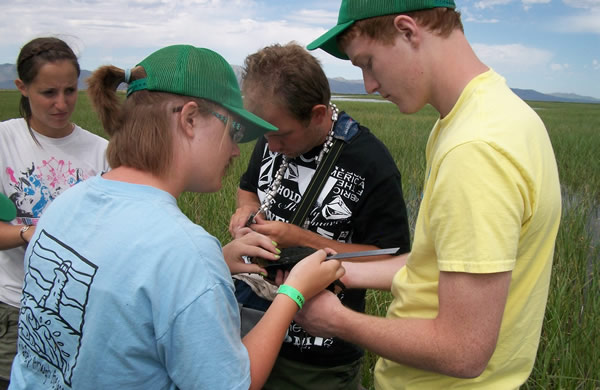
Bird Banding

The Youth Conservation Crew assist Weber State University professor, John Cavitt, and his students conducting research on Snowy Plover, Cliff Swallows, California Gulls, Great Blue Herons, and White-Faced Ibis throughout the season. The youth looked for nests, banded chicks, and assisted with vegetation data collection.